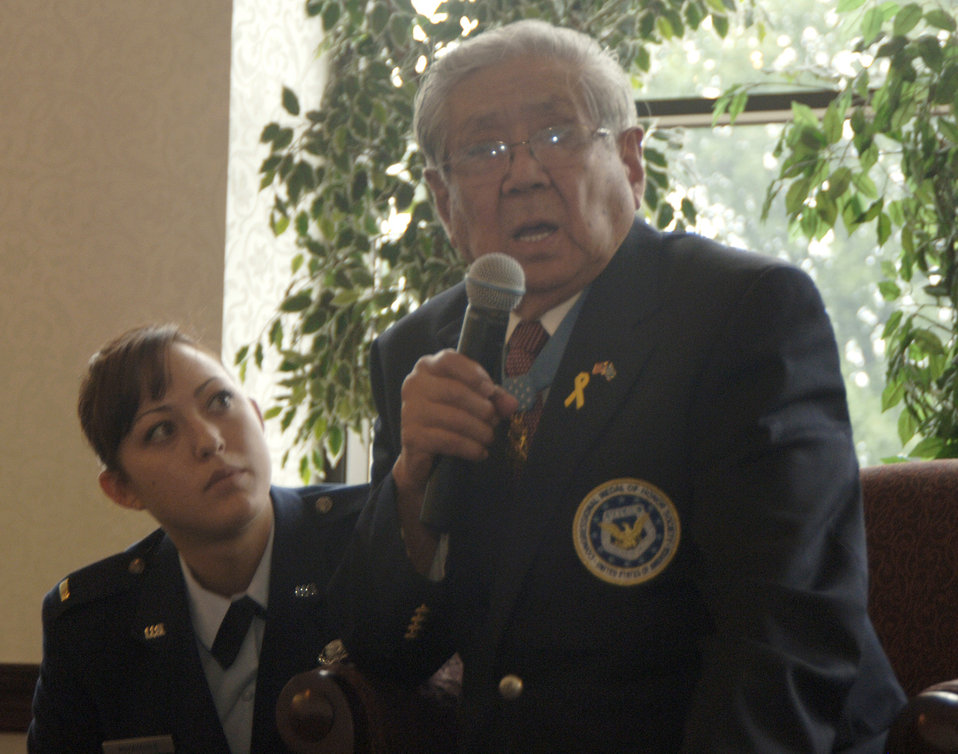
Medal of Honor recipient Hiroshi Miyamura answers questions May 17, 2010, at Scott Air Force Base, Ill., about his ordeal as a Korean War prisoner of war, with 2nd Lt. Marisa Miyamura by his side. Mr. Miyamura shared his experiences as a Korean War veteran and POW with members at Scott AFB as part of Asian-Pacific American Heritage Month celebrations. Lieutenant Miyamura is Mr. Miyamura's granddaughter.